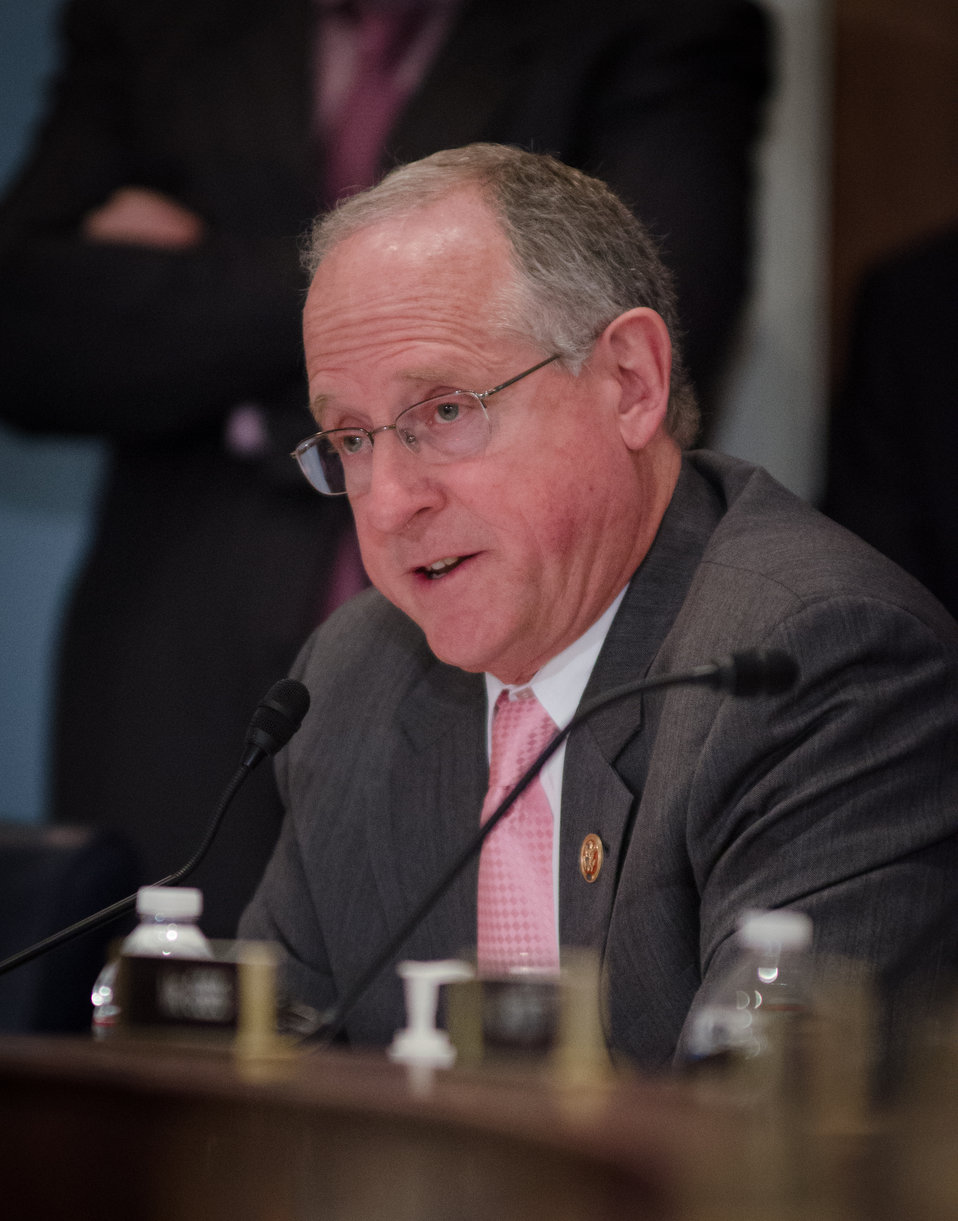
Representative K. Michael Conaway (OR) questions Agriculture Secretary Tom Vilsack, during his testimony before the House Agriculture Committee regarding the “State of the Rural Economy“ at the Longworth House Office Building in Washington, D.C. on Tuesday, Mar. 5, 2013.